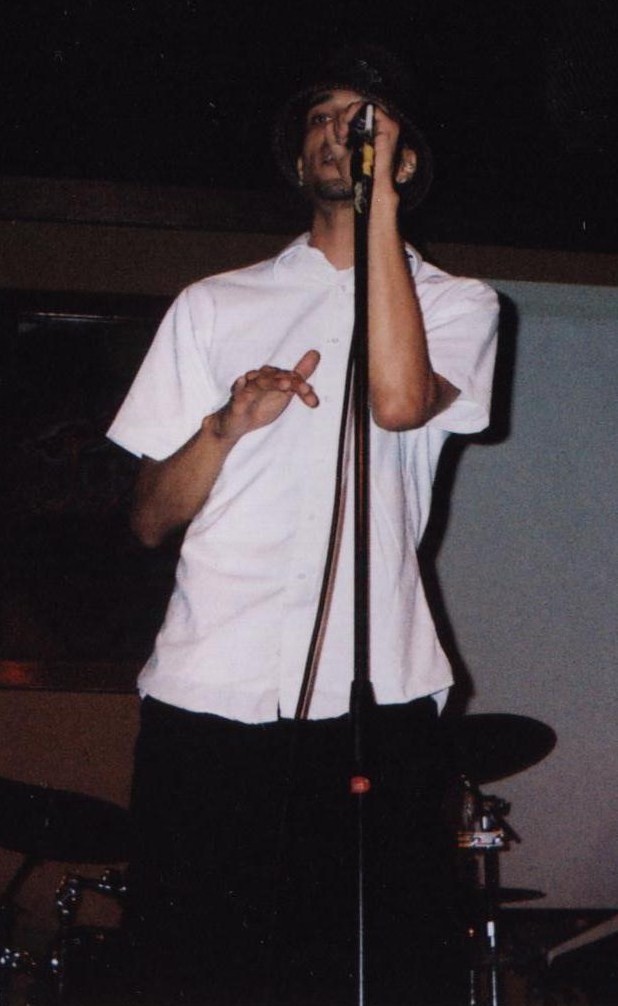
A photo I took of Corey Clark and Rueben Studdard